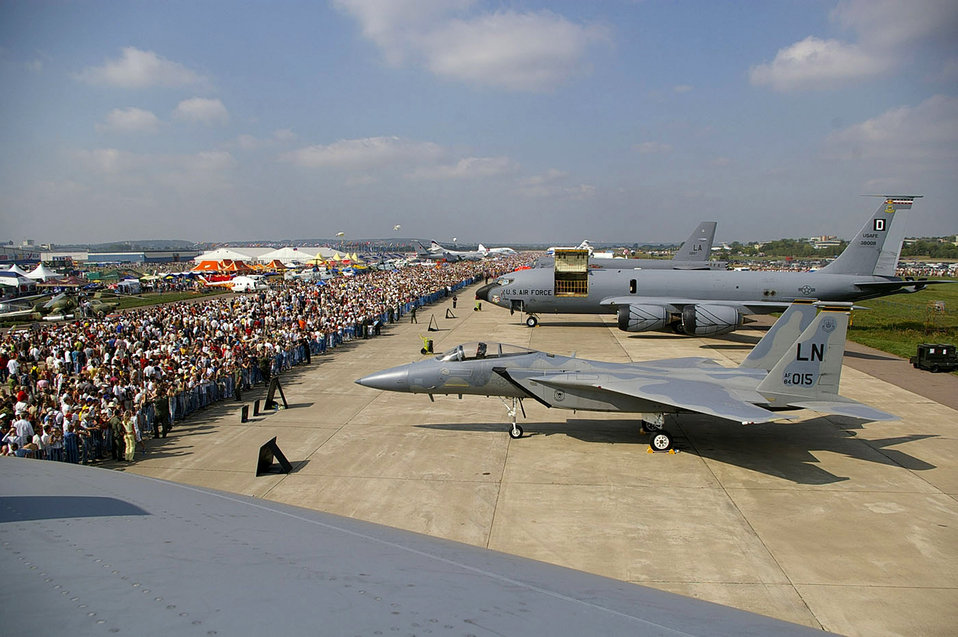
Airmen in Moscow reach out to children

A view from a B-52 Stratofortress cockpit shows just some of the thousands of people who visited the Moscow International Air Show Aug. 25 in Zhukovsky, Russia. A KC-135 Stratotanker from Royal Air Force Mildenhall, England; an F-15 Eagle from RAF Lakenheath, England; a B-52 from Barksdale Air Force Base, La.; a C-17 Globemaster II from McChord AFB, Wash., and two F-16 Fighting Falcons from Spangdahlem Air Base, Germany, were on static display at the air show, along with many other aircraft from all over the world.